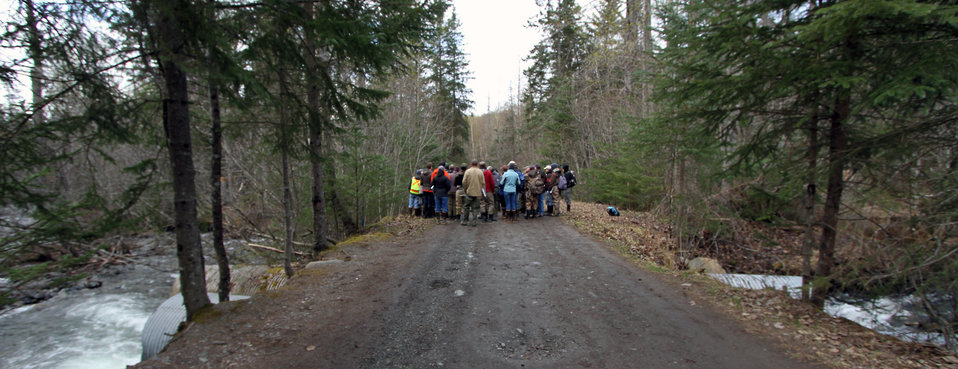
Fish Passage Workshop May 2014

Workshop participants gather at a fish passage barrier at a road-stream crossing in Indian, Alaska. Workshop hosts/organizers included the U.S. Forest Service, U.S. Fish and Wildlife Service, and the Alaska Department of Fish and Game. USFWS/Katrina Mueller